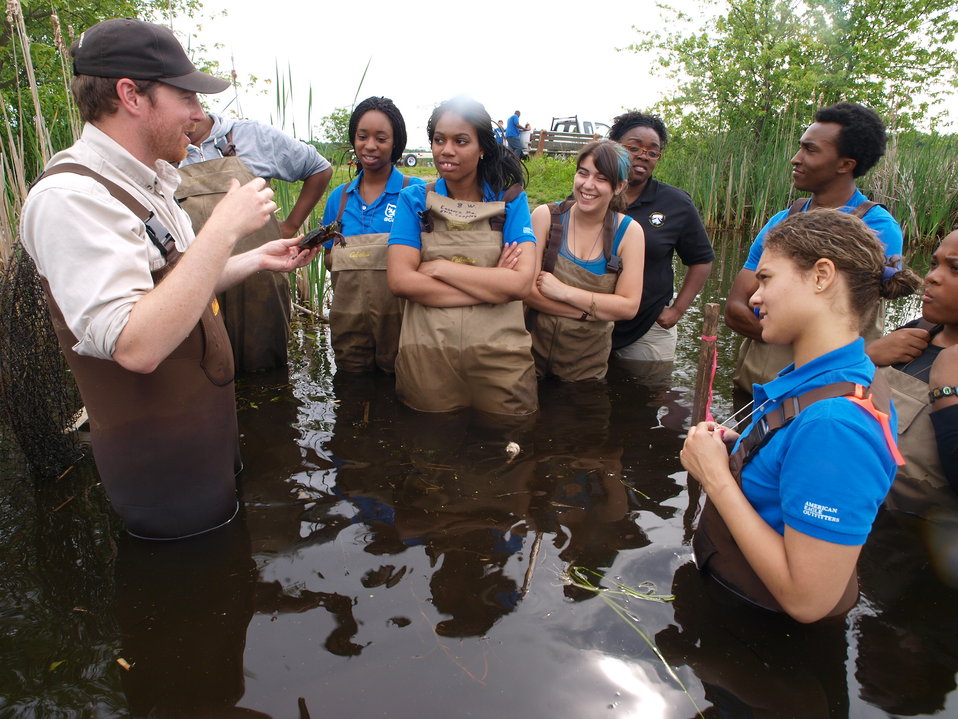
Biology Unit

Piping Plovers group wade into the impounds and look at different species of turtles.